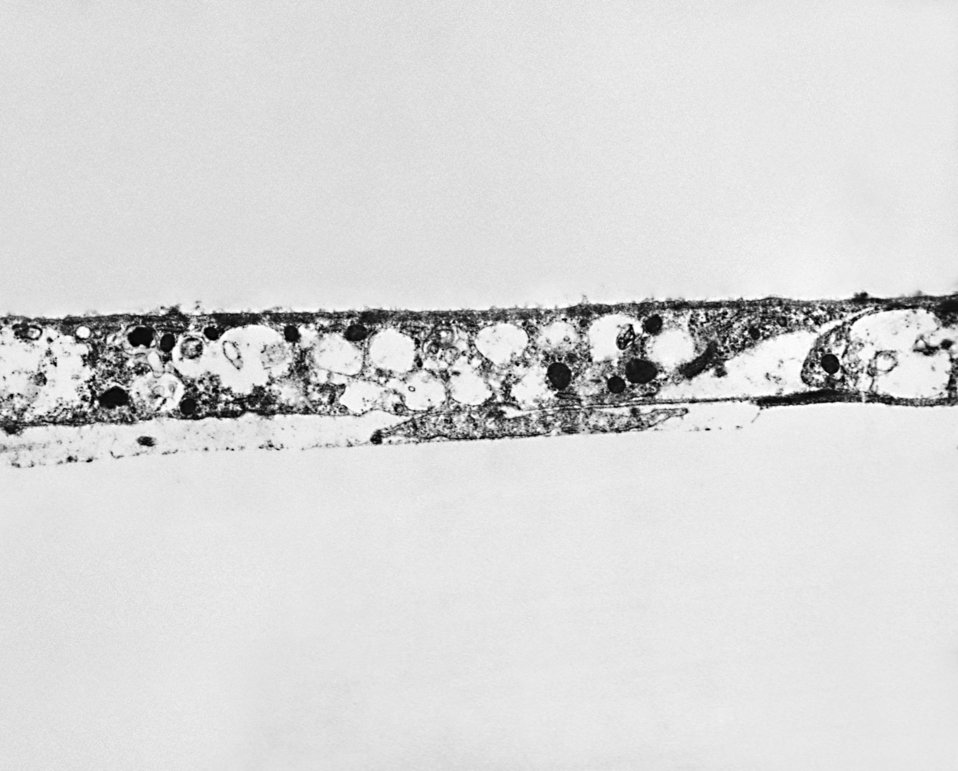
Electron micrograph of Treponema pallidum on cultures of cotton-tail rabbit epithelium cells (Sf1Ep).